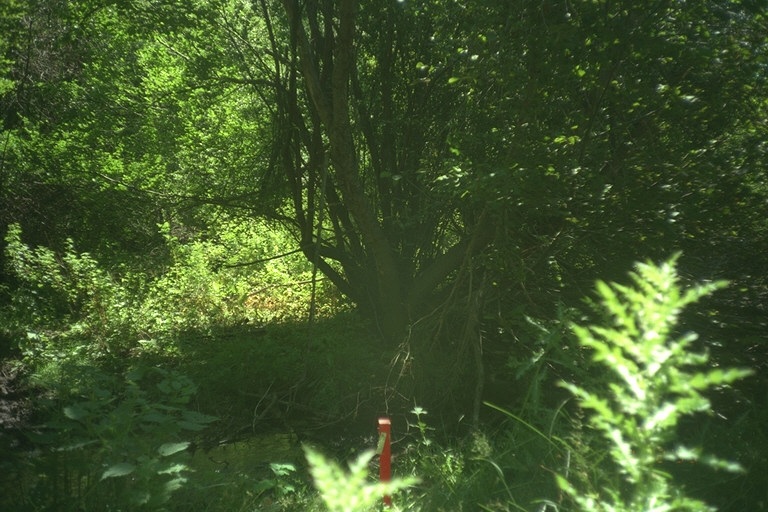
Riparian area Public Lands Salmon Field Office UCSC Upper Columbia Salmon Clearwater District